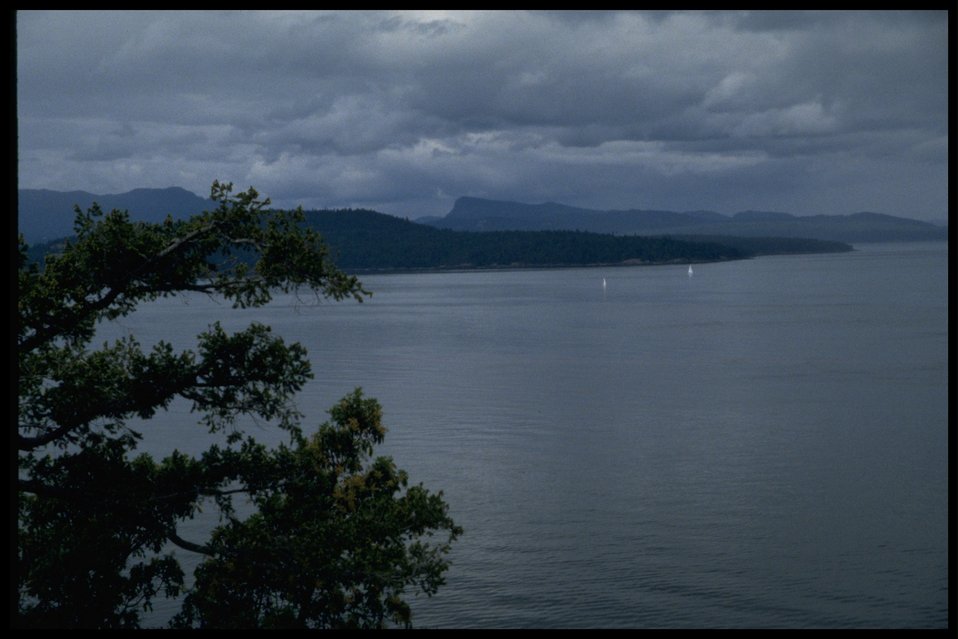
Scene from viewpoint at Turn Point.